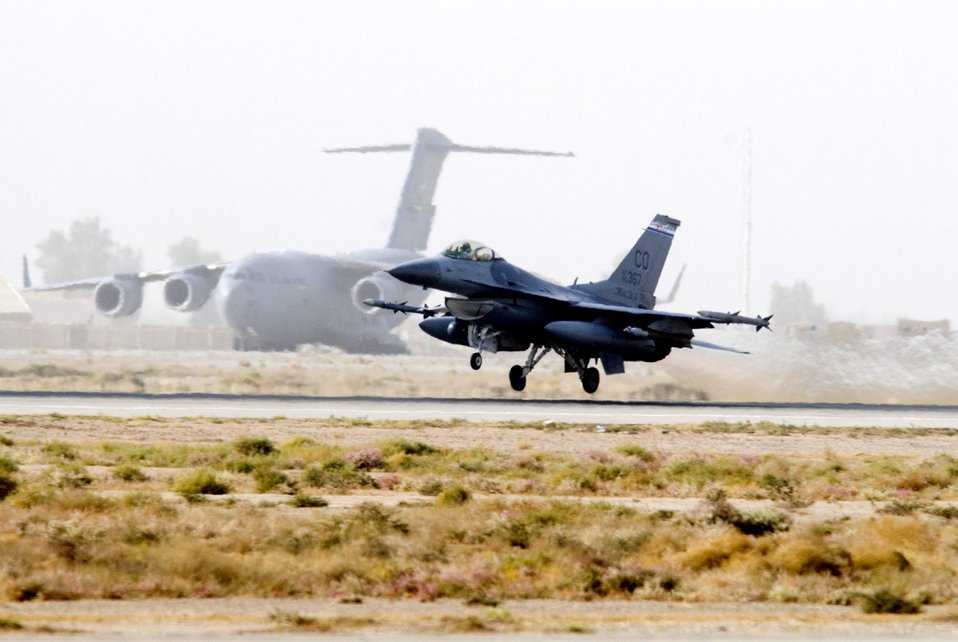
Airpower summary for Dec. 5, 2007

An F-16 Fighting Falcon from the Colorado Air National Guard takes off from Balad Air Base, Iraq. F-16s fly various missions such as armed overwatch, shows of force and close air support while supporting Operation Iraq Freedom.